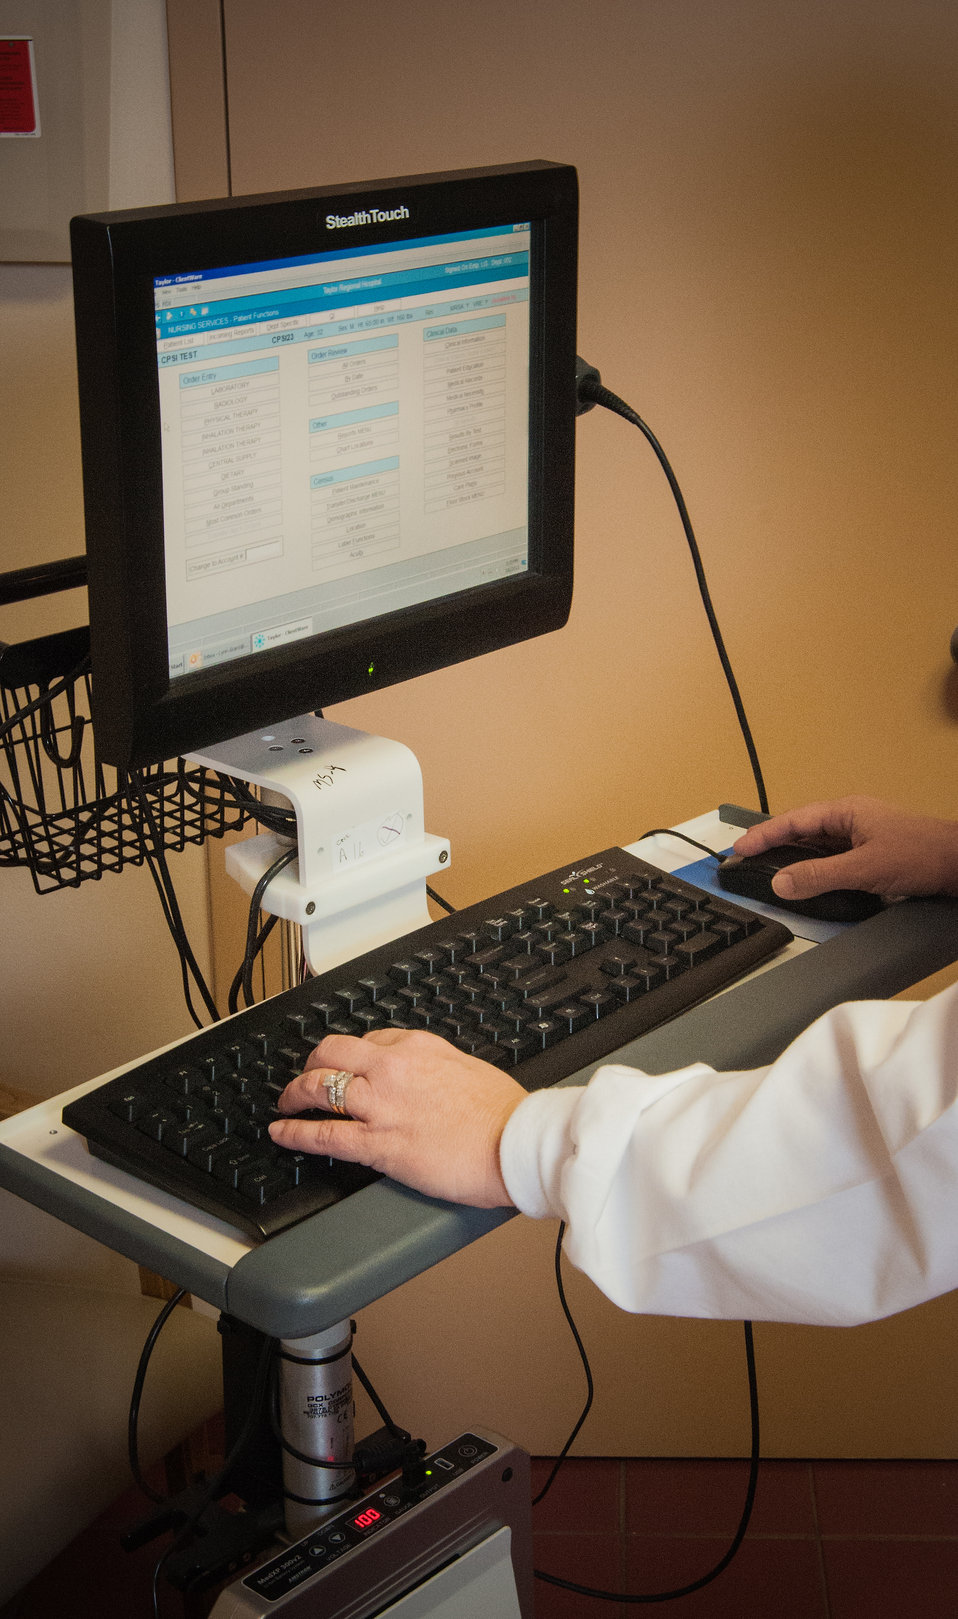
R.J. Taylor Memorial Hospital, Inc. Licensed Practical Nurse Dora Cater, LPN discusses a patients’ diagnosis and symptoms and records the information in the hospitals’ Electronic Medical Records System in Hawkinsville, GA on Mar. 6, 2013. The hospital is a licensed private, not-for-profit acute care facility providing emergency, specialty and primary health care in an area of rural Georgia that has a high percentage of people living below the state average poverty level and considered most economically distressed. The hospital has purchased an Electronic Medical Records System under an incentive program by the Federal government through the U.S. Department of Agriculture (USDA) Rural Development (RD) Community Facilities Loan (CF) that ensures fiscally responsive access to superior quality integrated health care.